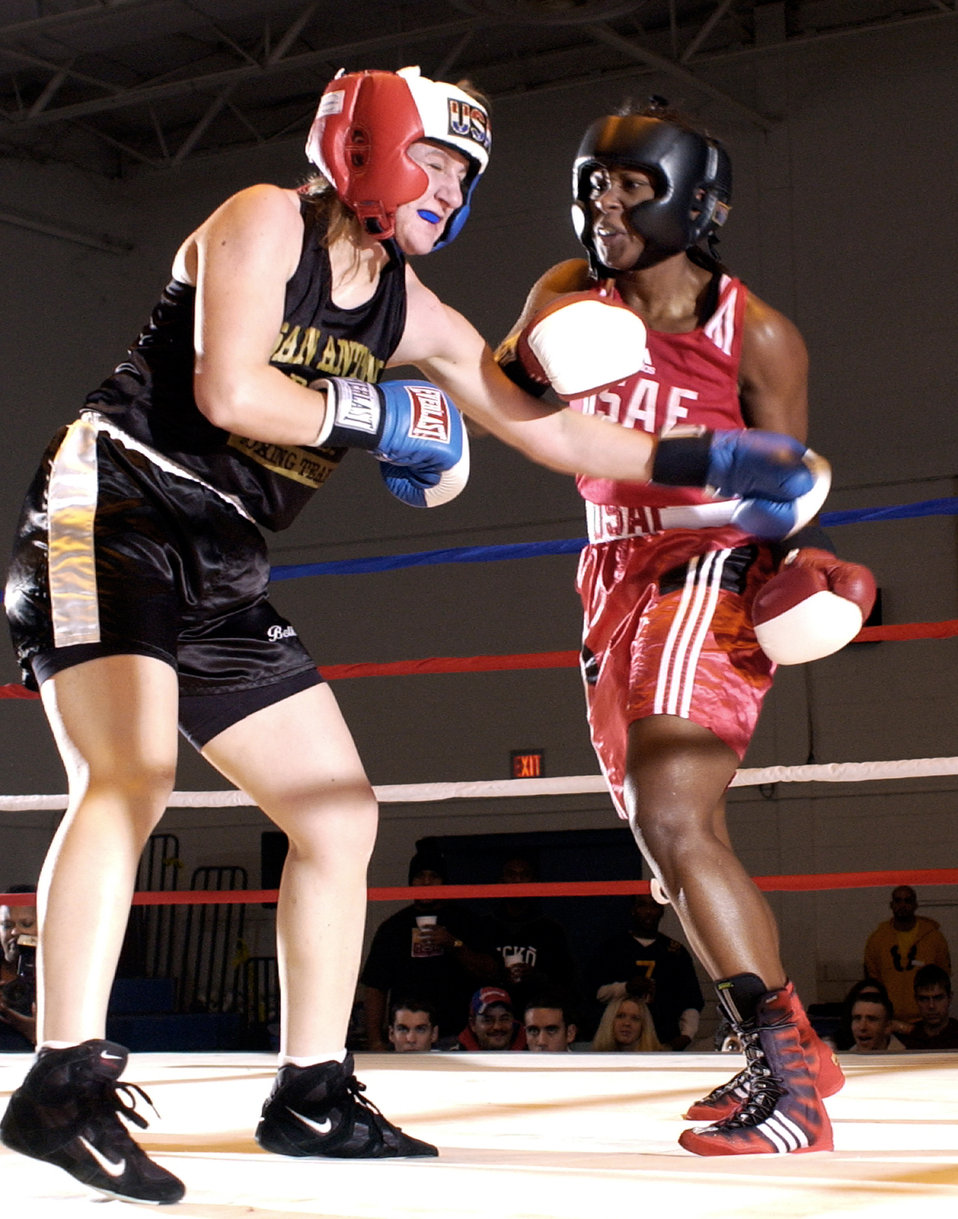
Knockout Queen

SAN ANTONIO -- Staff Sgt. Charmaine Carrington, right, the No. 1 ranked female amateur in the United States, delivers a combination of punches to Elizabeth Villareal, a local San Antonio opponent, at the U.S. Air Force Boxing Championship on Nov. 8. The U.S. Air Force Boxing Championships were held at the Kelly Field Bennet Fitness Center near Lackland Air Force Base, Texas. Carrington is from the 33rd Maintenance Squadron at Eglin AFB, Fla., and was the only female on the Air Force boxing team.